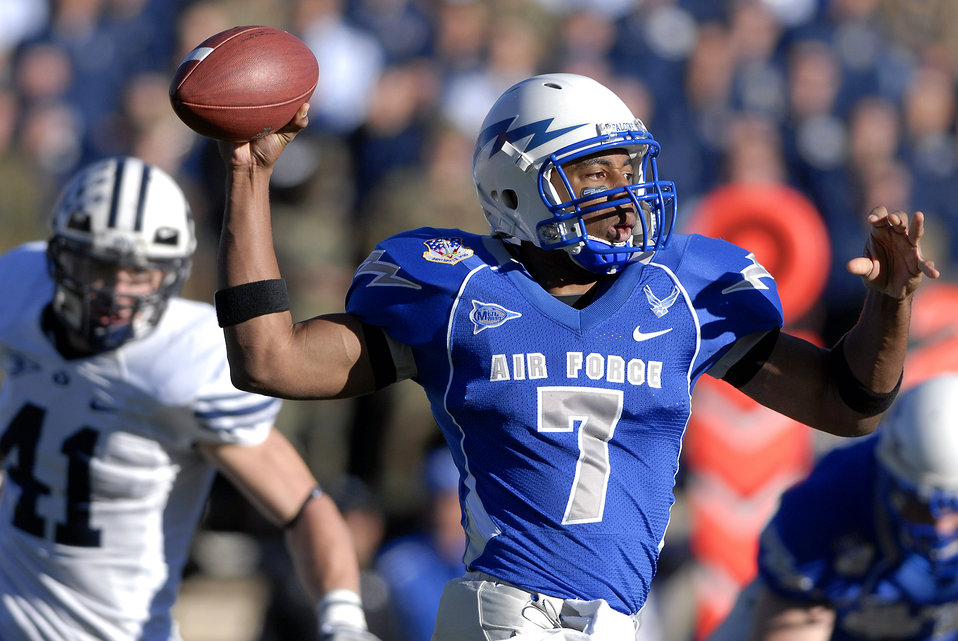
Rough third quarter ground Falcons

Air Force Falcon quarterback Tim Jefferson fires off a pass during the 38-24 loss against Brigham Young University Nov. 15 at Falcon Stadium in Colorado. Jefferson finished the game with 75 rushing and 98 passing yards.